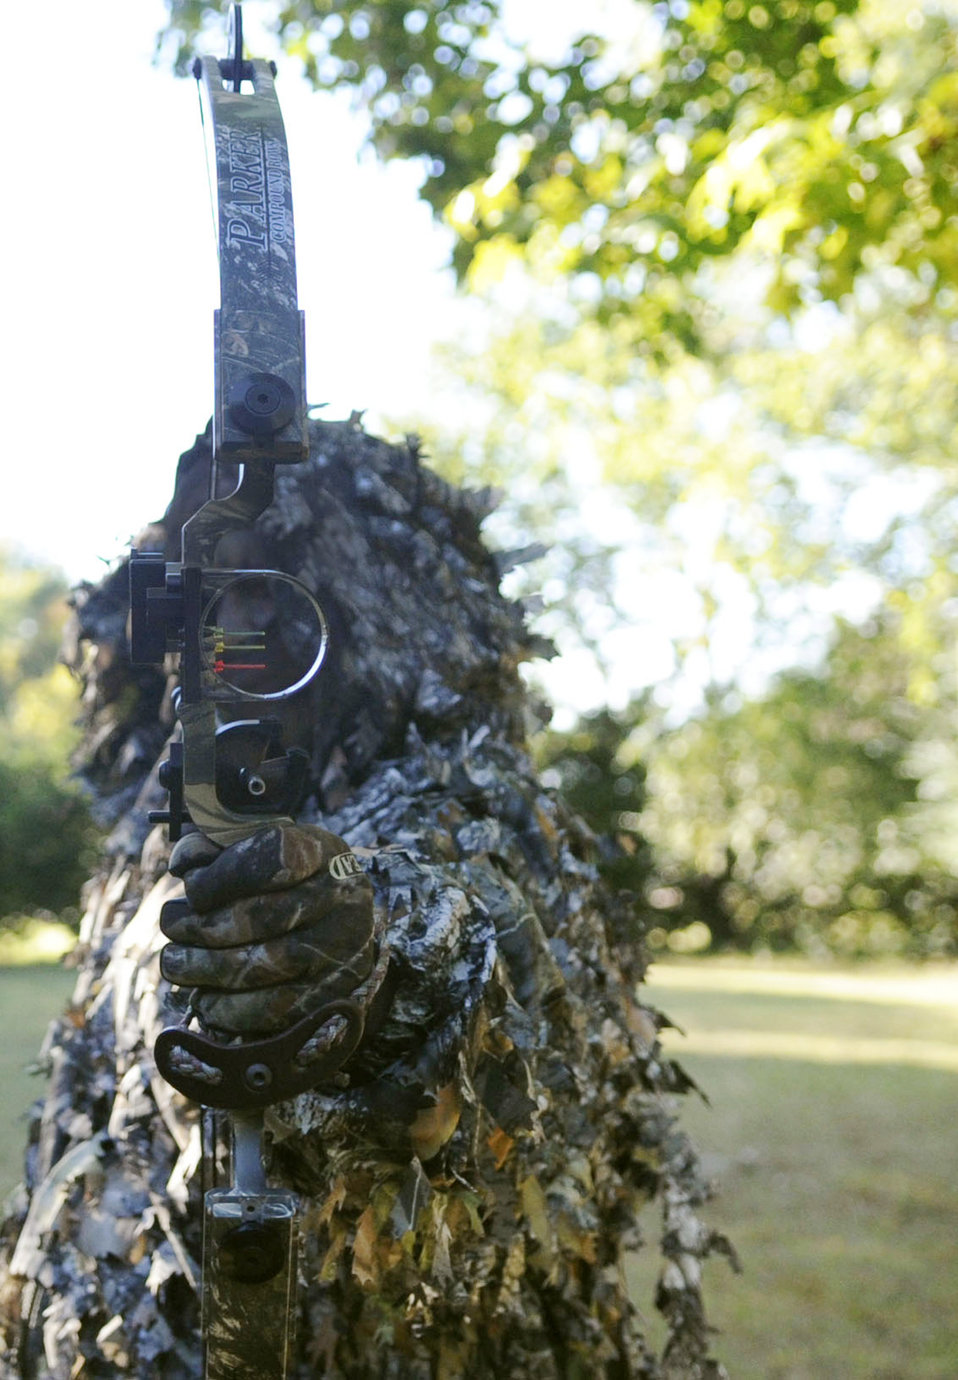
Straight shooter

David Hopper practices his bow-hunting skills at Langley Air Force Base, Va., Oct. 8, 2009. Lasting from Oct. 3 to Nov. 14, bow-hunting season has special rules; participants must obtain a state hunting license and qualify at various distances. Mr. Hopper is an operations specialist with the 1st Fighter Wing Public Affairs office.